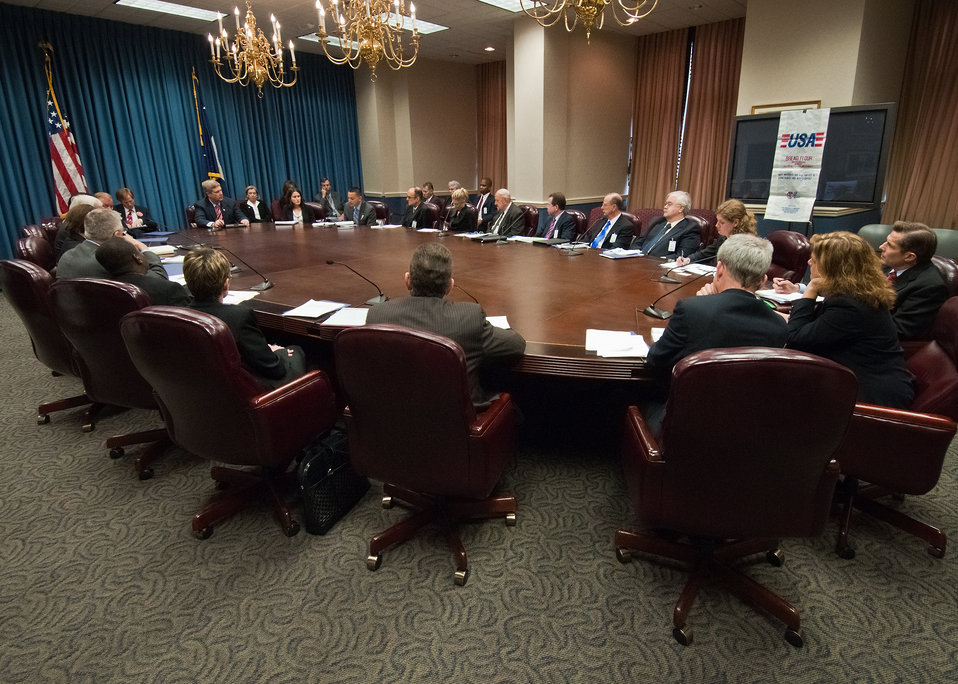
Agriculture Secretary Tom Vilsack speaks to recipients of United States Department of Agriculture international assistance grants under the Food for Progress and McGovern-Dole International Food for Education and Child Nutrition programs for fiscal year 2011, benefiting more than 5.2 million people. The McGovern-Dole program awarded more than $346 million in grants that contribute significantly to the President’s Feed the Future Initiative. The meeting took place at the United States Department of Agriculture in Washington, DC, Tuesday, May 17, 2011.